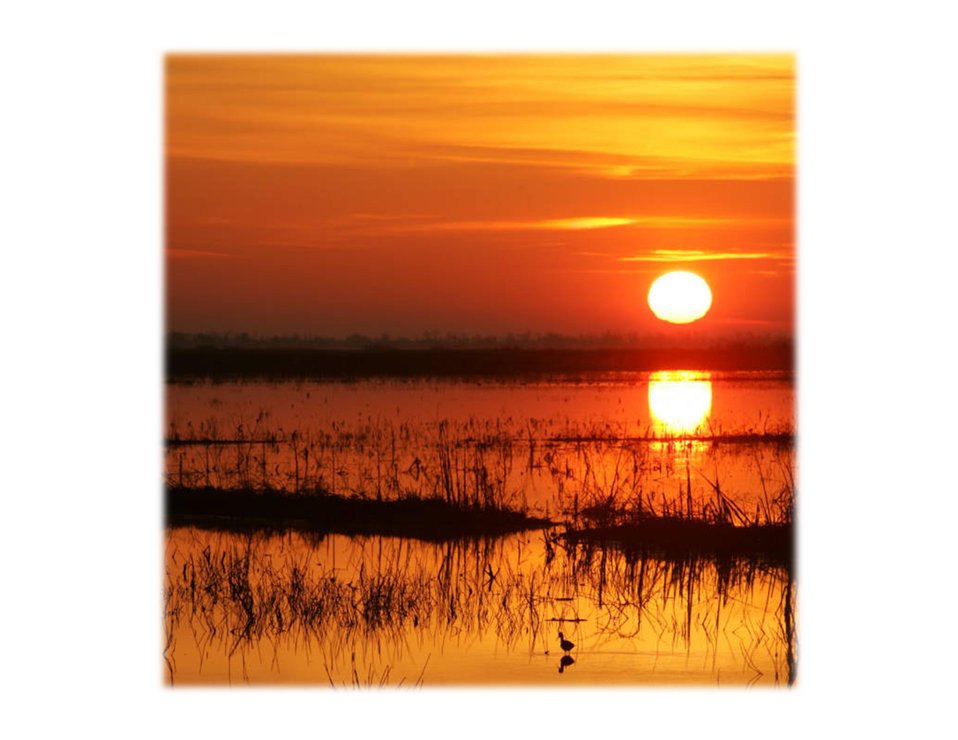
Orange sky sunset, Louisiana